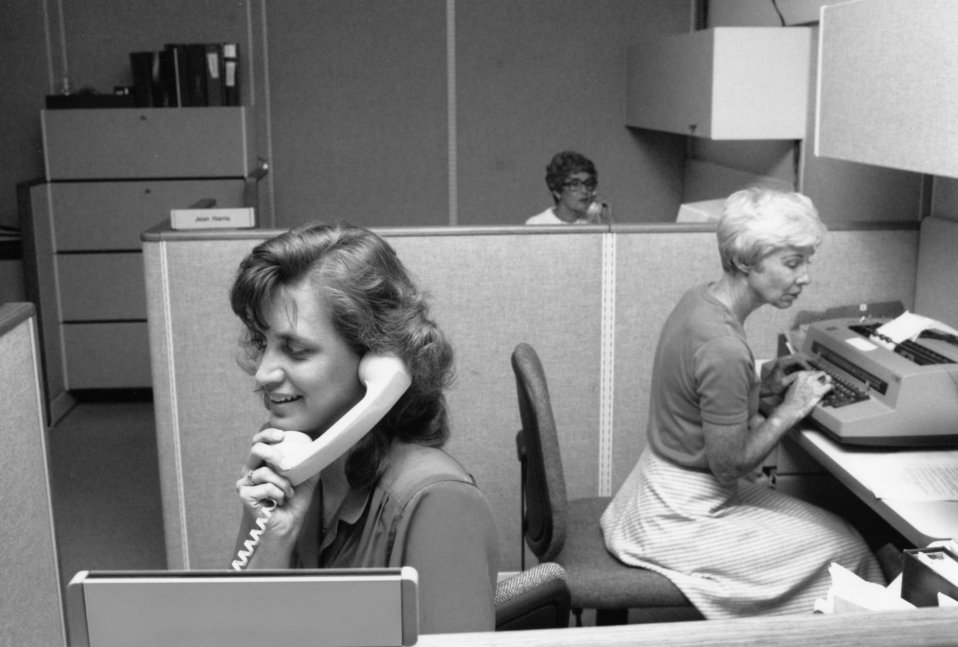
Photographed in 1991 while at their posts in the Public Inquiries Office, then located on the Roybal Campus in Atlanta, Georgia, were Centers for Disease Control employees Sharon Middlebrook (front), Jo Colquitt (right), and Jean Harris (back).